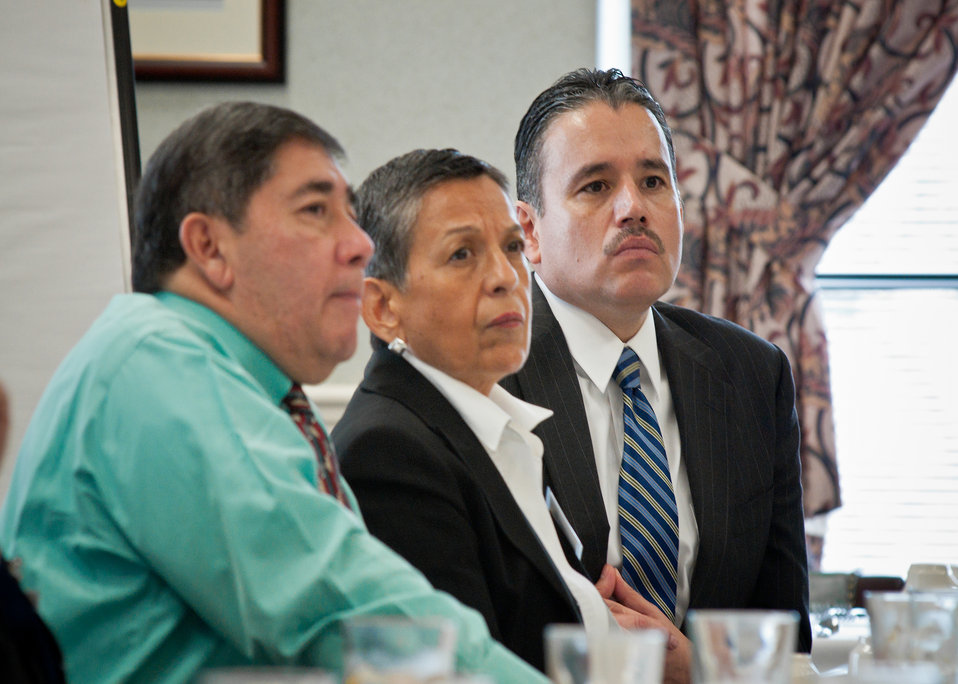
From left: Rick Chavez, President, Hispanic American Cultural Effort (HACE), Ida Hernandez, Coalition for Fairness for Hispanics in Government and Oscar Gonzales, Jr., Deputy Assistant Secretary for Administration listen to presenters during the facilitated discussion: “Where Can You Assist?” at
the United States Department of Agriculture Hispanic Roundtable at the United States Department of Agriculture, Monday, December 5, 2011 in Washington, DC. The roundtable focused on recruitment, retention and employee development for the purpose of developing the USDA Hispanic recruitment Plan. The roundtable hosted several national Hispanic partners and recognized USDA Hispanic organizations and associations.